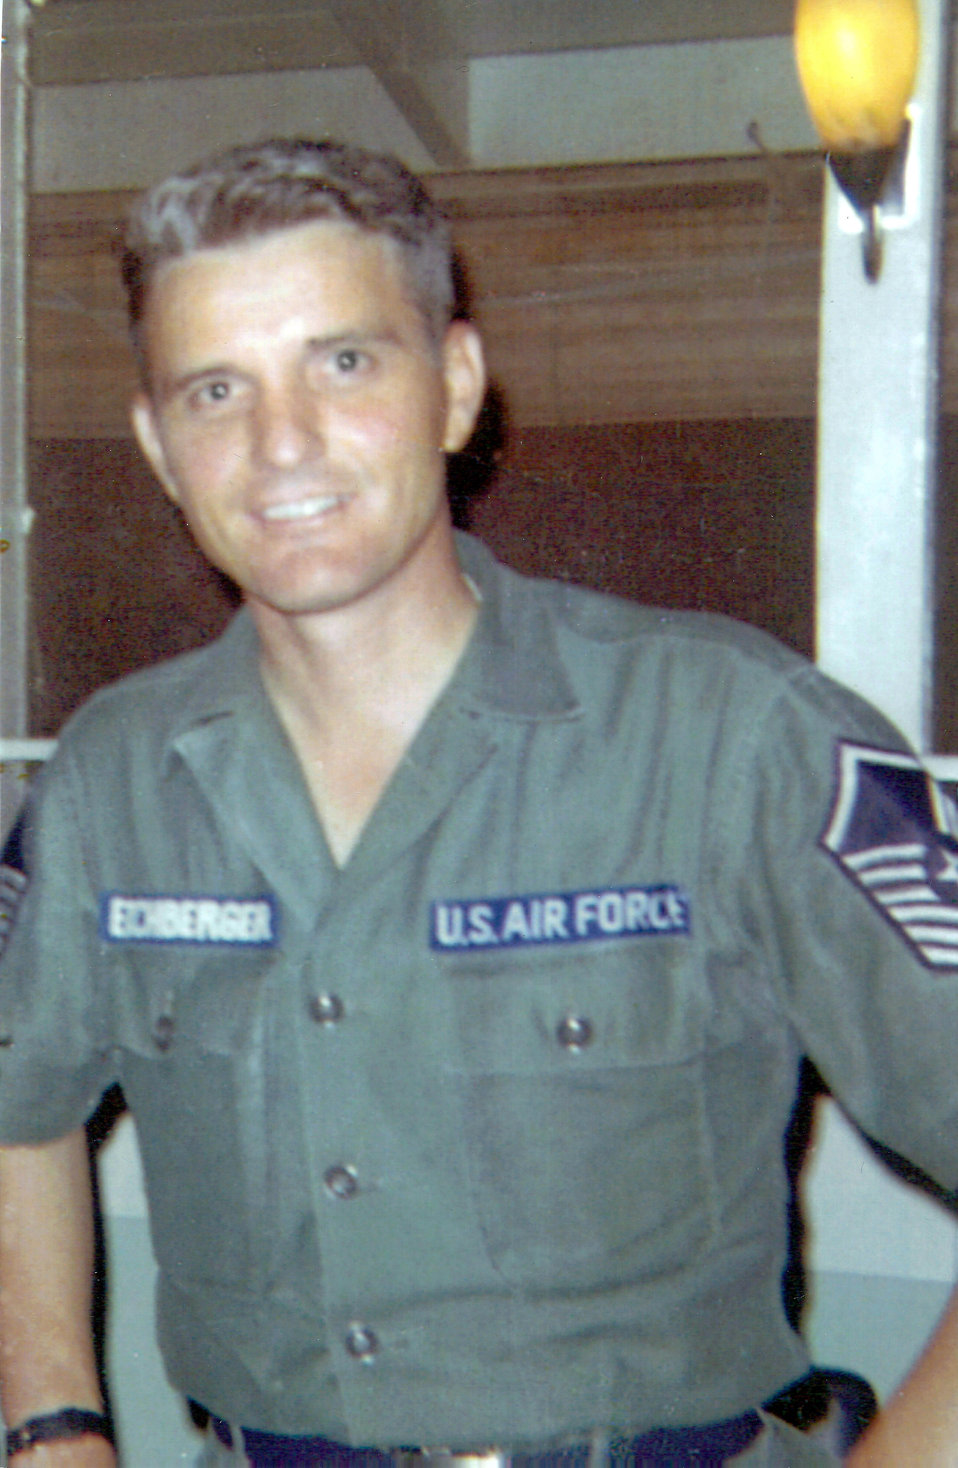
Airman to receive Medal of Honor for '68 actions

Chief Master Sgt. Richard L.